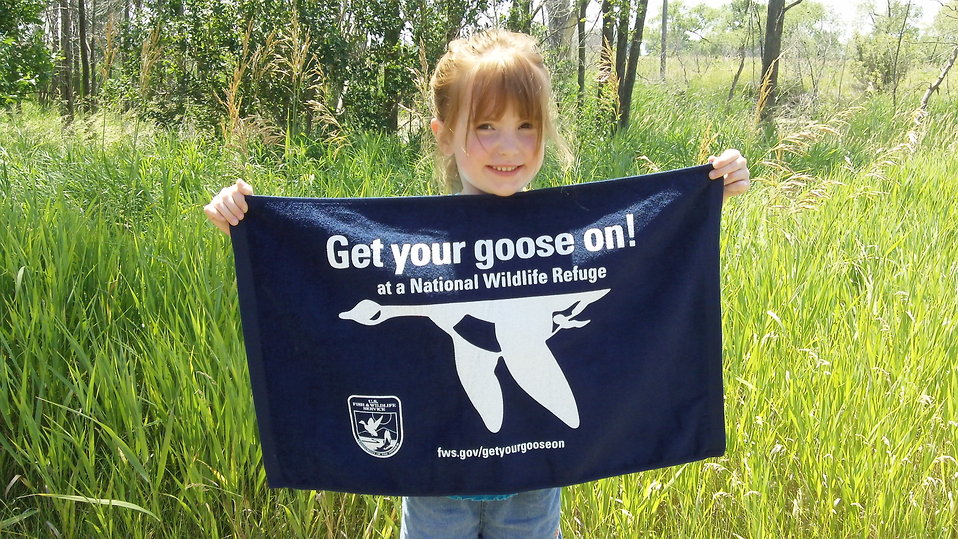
Get Your Goose On!

Photo taken at Huron Wetland Management District in east-central South Dakota.